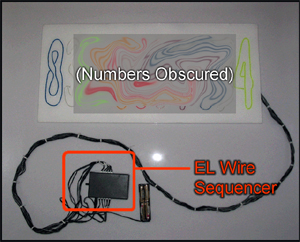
This is a photo I took of something I made. I release all rights to this picture to Wikipedia and the public domain, etc.